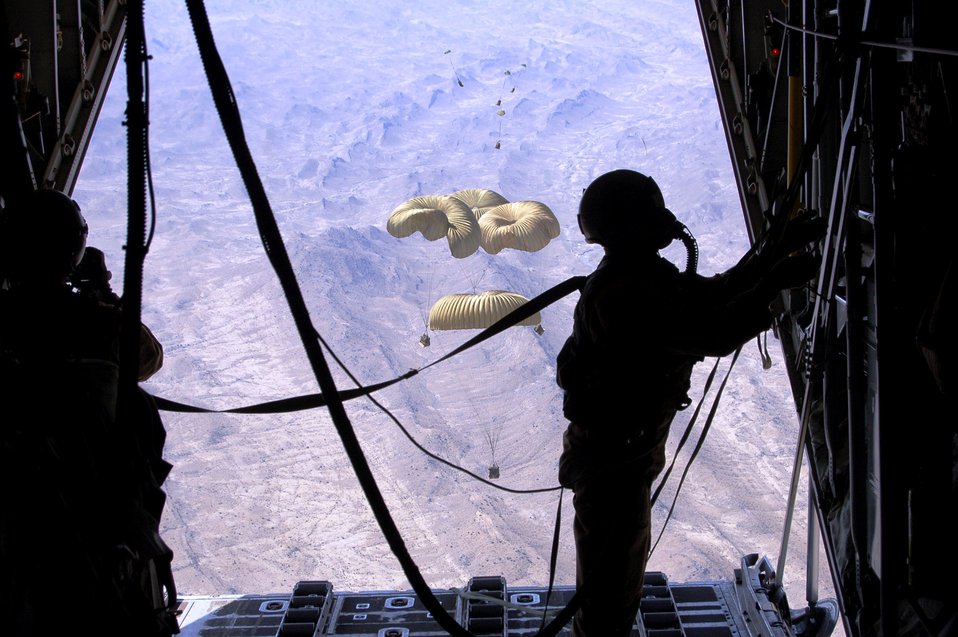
Precision airdrop

A C-130 Hercules loadmaster observes Improved Container Delivery System bundles March 27 that were airdropped over Afghanistan to replenish supplies for U.S. ground forces supporting Operation Enduring Freedom.